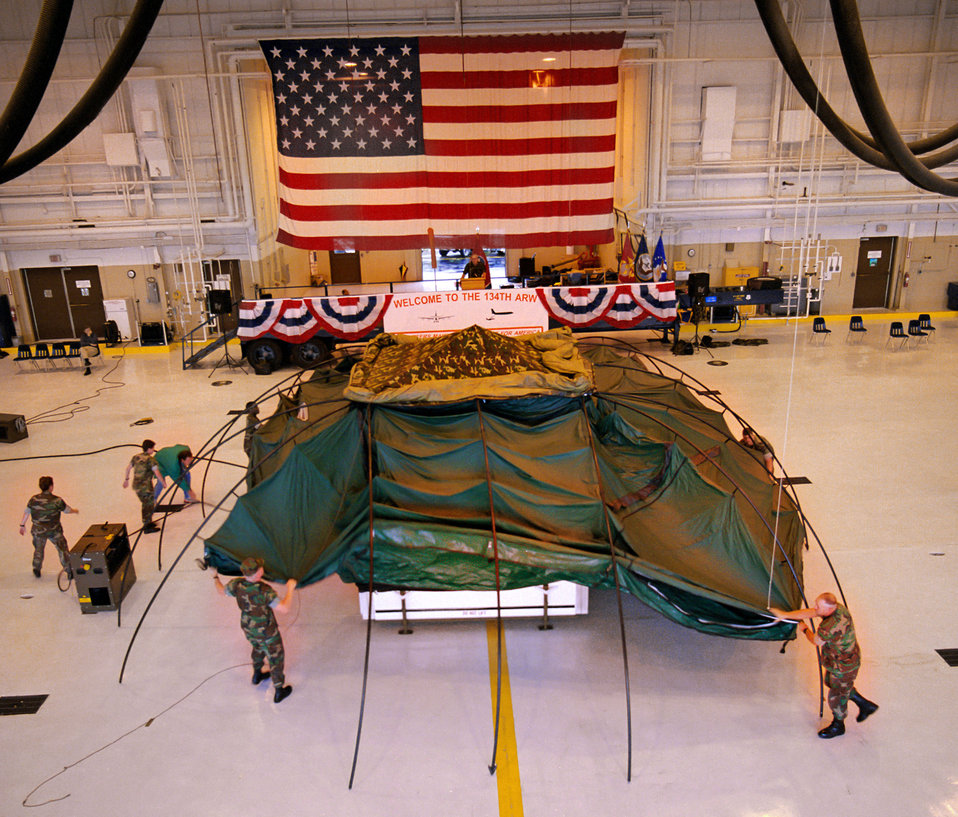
Hospital in a Box - Tennessee Air National Guard at McGhee Tyson Airport Knoxville

97-497-11 DOE photo by Lynn Freeny

Hospital in a Box - Tennessee Air National Guard at McGhee Tyson Airport Knoxville Tennessee 10-25-1997